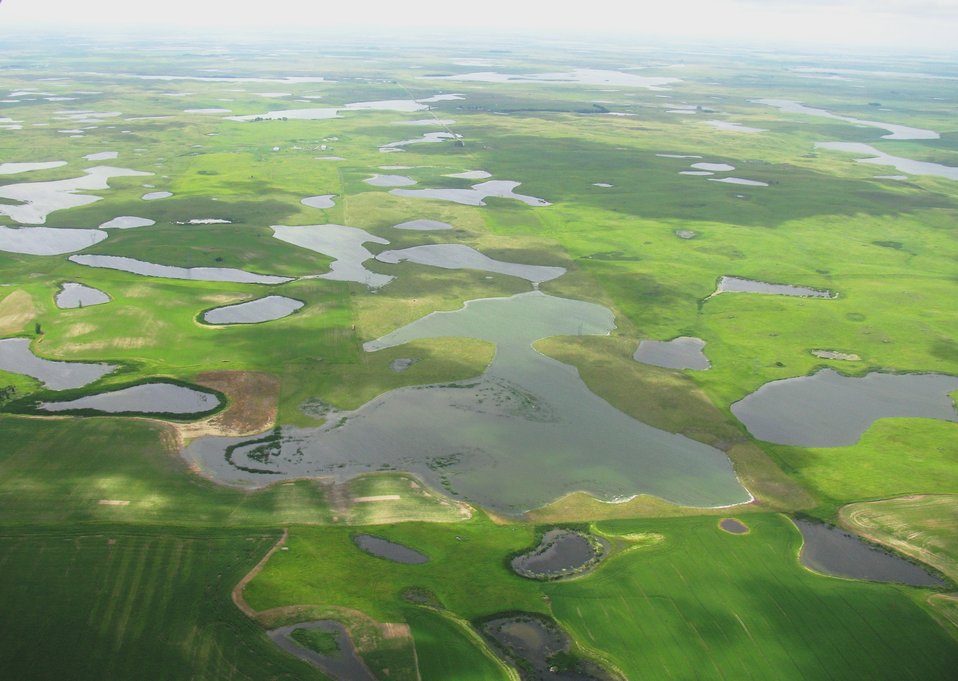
Prairie Potholes

Wetlands and their plants filter nutrients and chemicals from rainwater runoff, replenish groundwater aquifers, and provide habitat to numerous animal species. The hundreds of plant species found in and around wetlands are specially adapted to their environment.